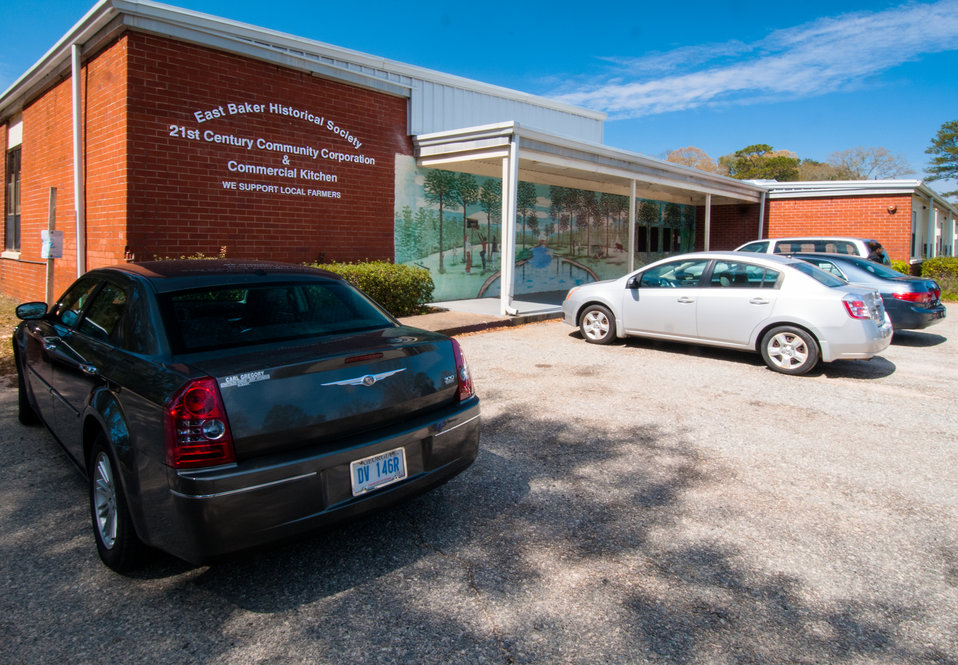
Cars sit in the parking lot of the East Baker Historical Society Community Center in Newton, Baker County, GA on Mar. 7, 2013. The East Baker Historical Society Community Center secured a U.S. Department of Agriculture (USDA) Rural Development (RD) Community Facilities (CF) Loan for the kitchen that enabled residents to prepare catered meals and to prepare and package food products. The USDA Strike Force Initiative has designated Baker County, GA as a Strike Force county selected to receive assistance to relieve persistent poverty in historically high-poverty counties.